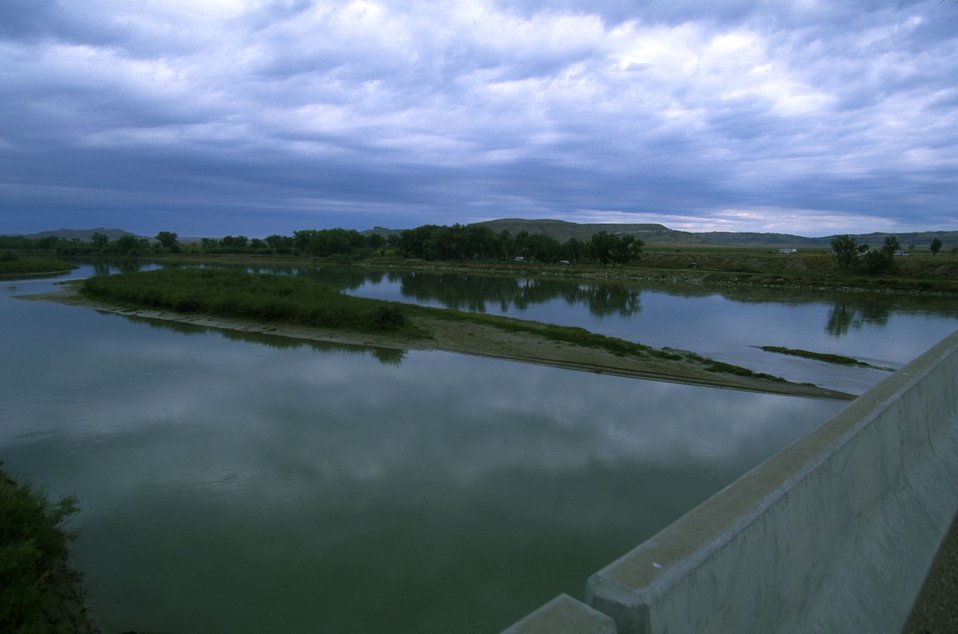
Judith Landing along Upper Missouri National Wild and Scenic River